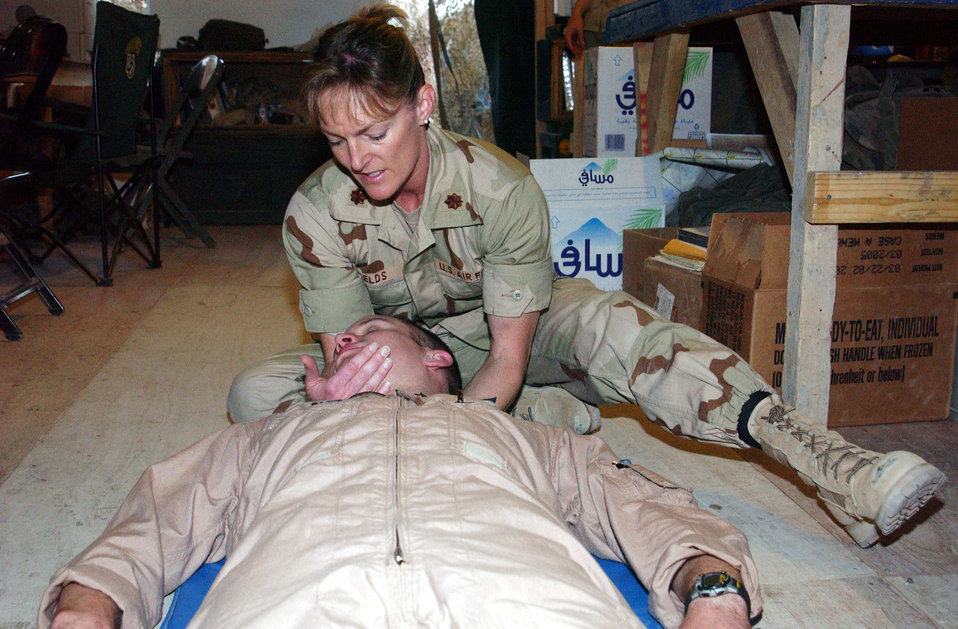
Physical therapy

OPERATION IRAQI FREEDOM -- Maj. Laura Fields works on stretching out a pilot's neck and shoulder muscles during a physical therapy team visit to a Marine flying squadron tent. The team visits different flying units each night at the forward-deployed location supporting Operation Iraqi Freedom.